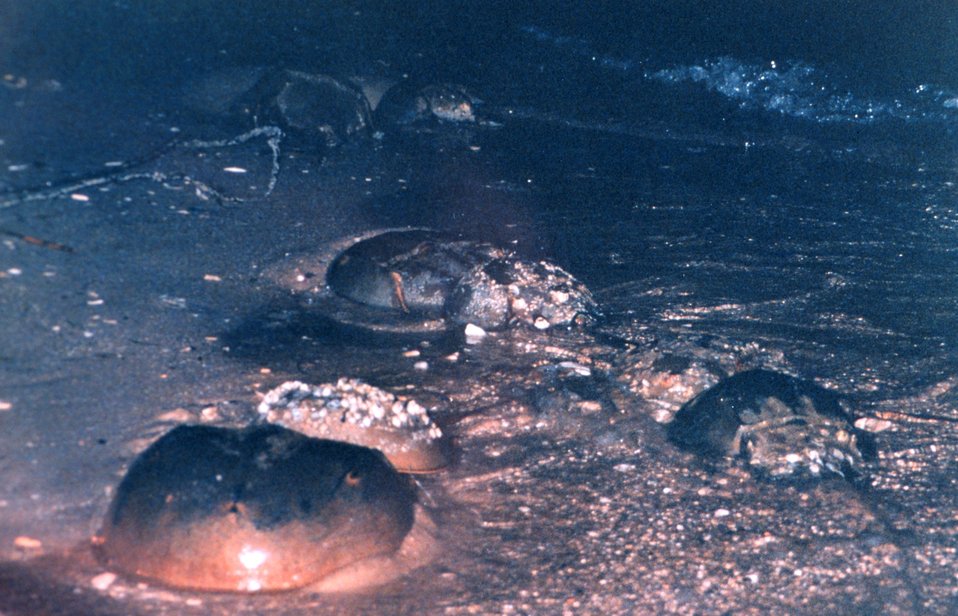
Horseshoe crabs coming into the shallows at Flag Ponds Nature Park, a unit of Montgomery County, Maryland, public schools.